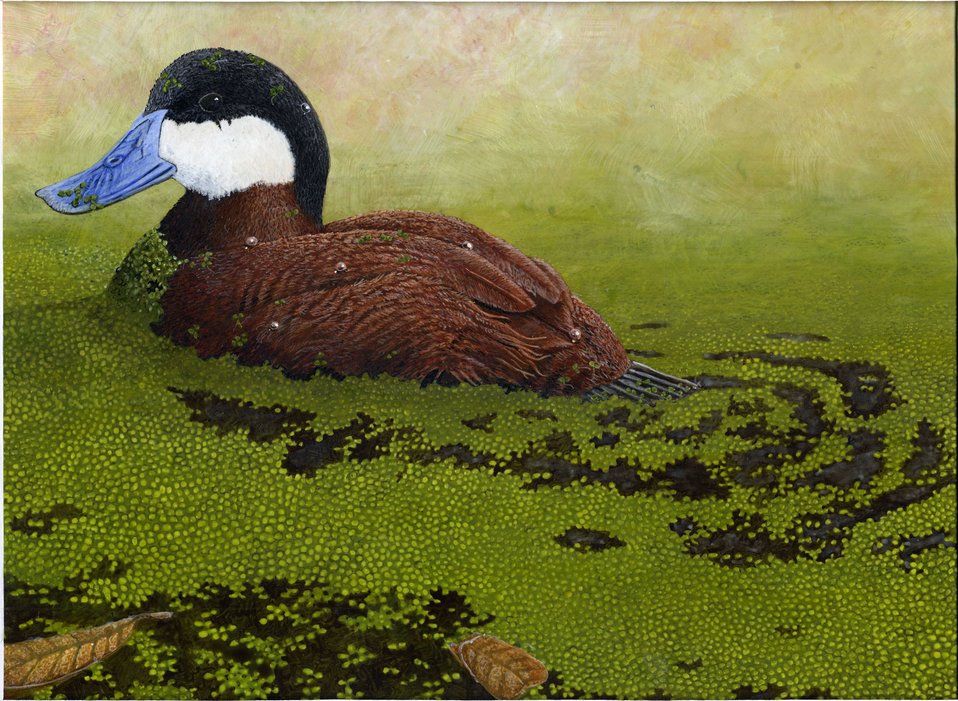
Louisiana

2012 Jr Duck Stamp Program
State Best of Show
Louisiana